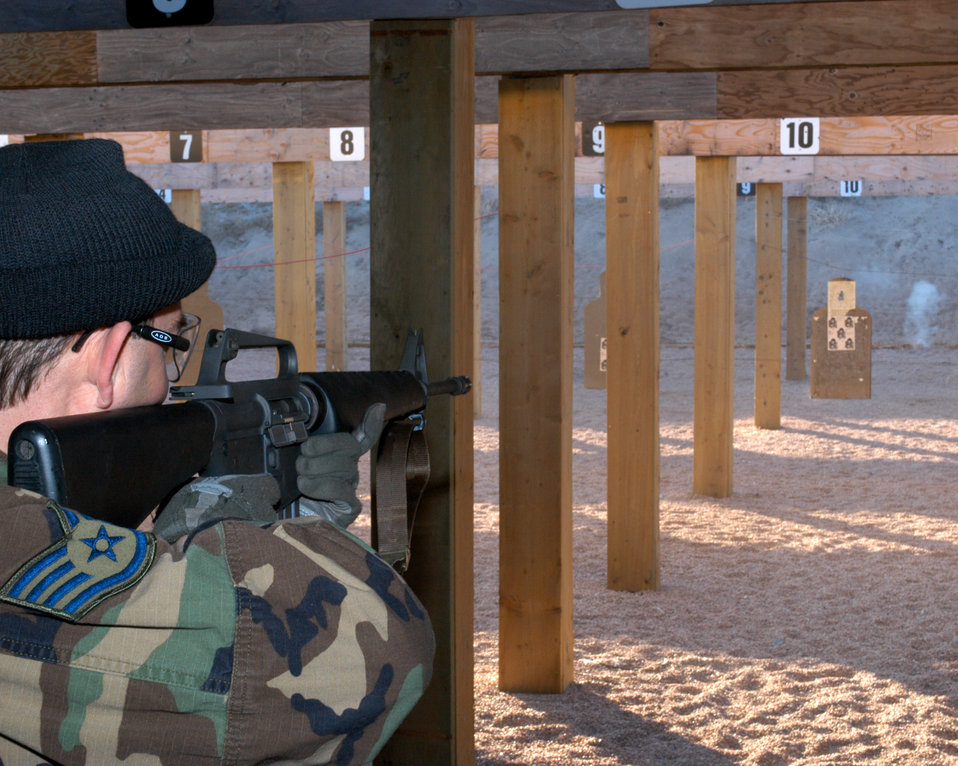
On target

BUCKLEY AIR FORCE BASE, Colo. - Tech. Sgt. Chad Jones fires on targets during the 2005 Chief of the National Guard Bureau Phase 1 Shooting Tournament here Jan. 23. The purpose of the tournament is to provide marksmanship activities that challenge Guard members to fully develop individual small arms proficiency and qualification skills. Sergeant Jones is with the Colorado National Guard.